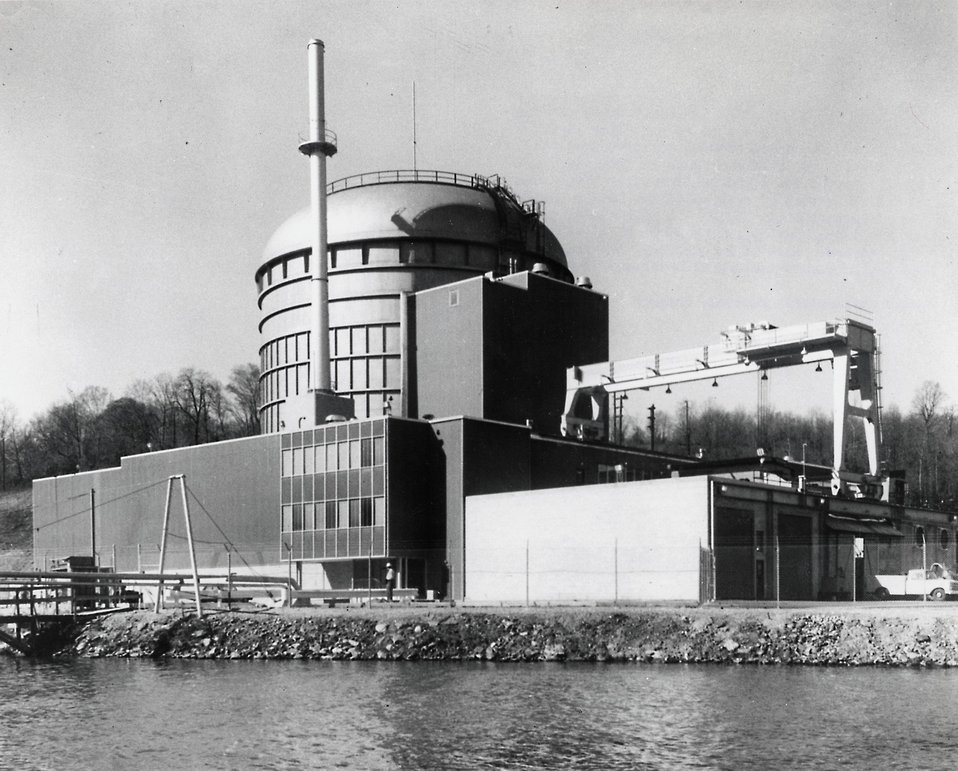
General Purpose Heat Source (GPHS) module assembly.